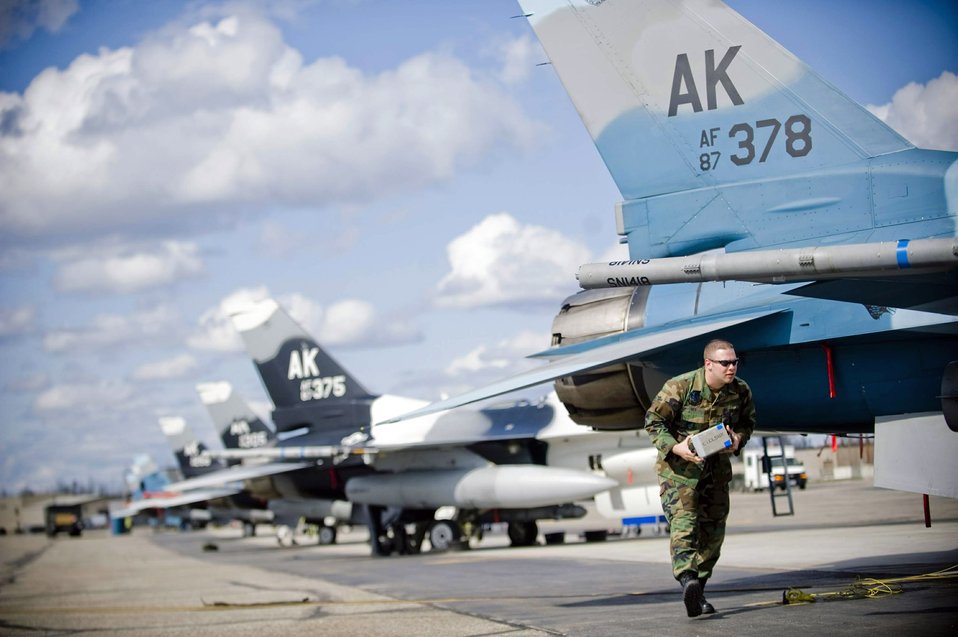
'Aggressive' training helps pilots outmaneuver enemy

Airman Brad Ivey removes chaff from an 18th Aggressor Squadron F-16 Fighting Falcon May 8 at Eielson Air Force Base, Alaska. The squadron is participating in Northern Edge 2008, simulating enemy aircraft from various countries in order to allow joint forces to train for world wide crises. Airman Ivey is a 354th Aircraft Maintenance Squadron crew chief.